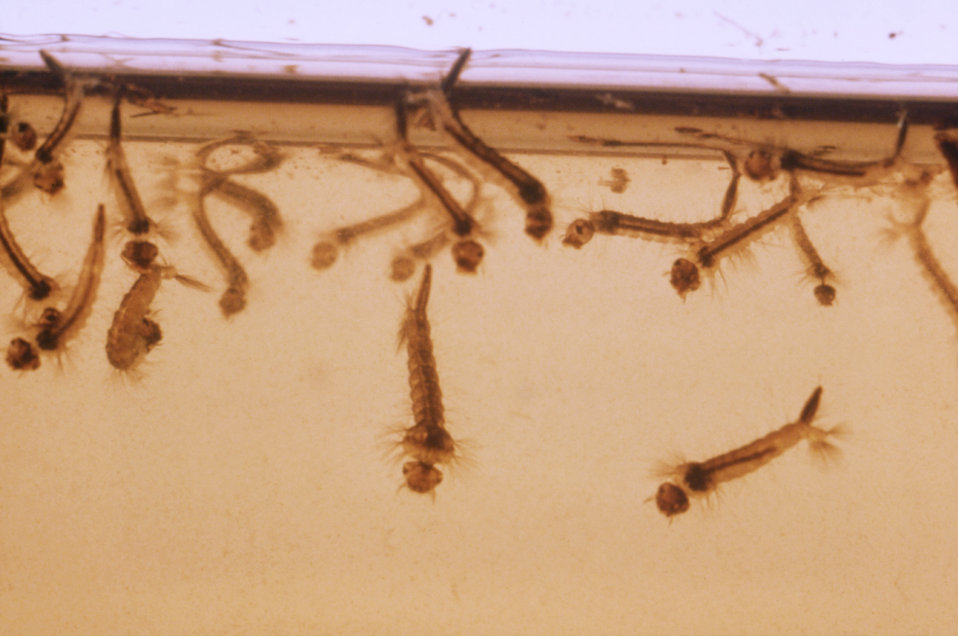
This photograph shot at a close distance depicts mosquito larvae collecting at the surface of this water sample.